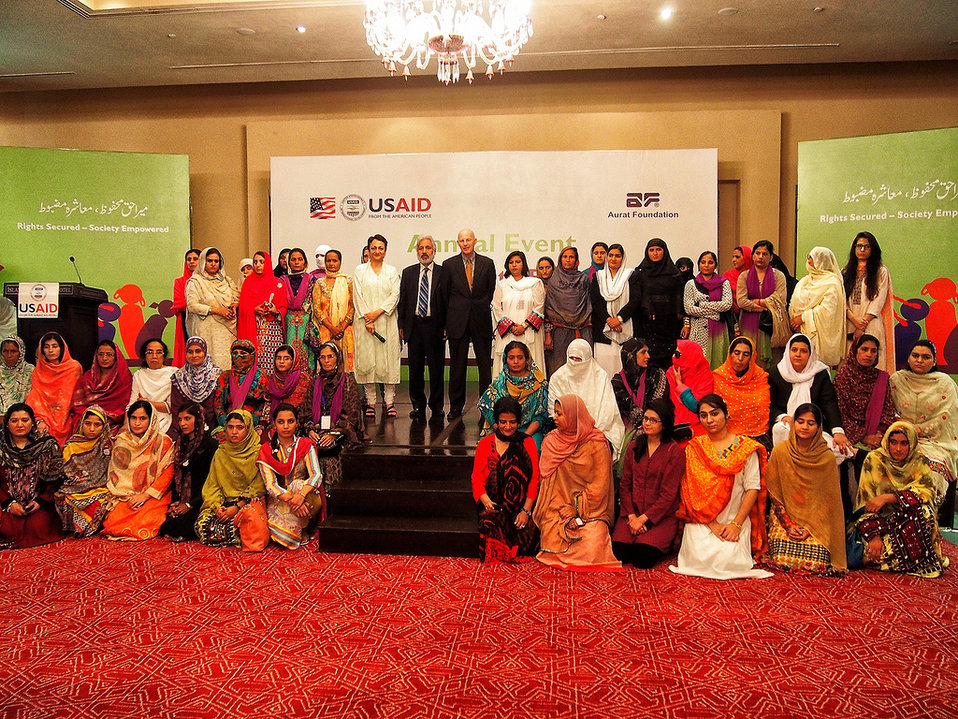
Gender Equity Program, Pakistan

USAID and Aurat Foundation annual event in Islamabad, Sept. 20, 2013